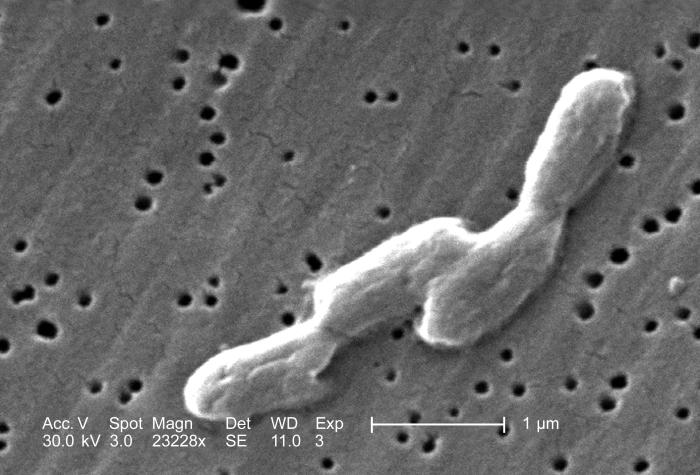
This scanning electron micrograph (SEM) depicts four highly magnified rod-shaped, motile, Gram-negative Salmonella infantis bacteria, which are attached; Magnification 23228x.